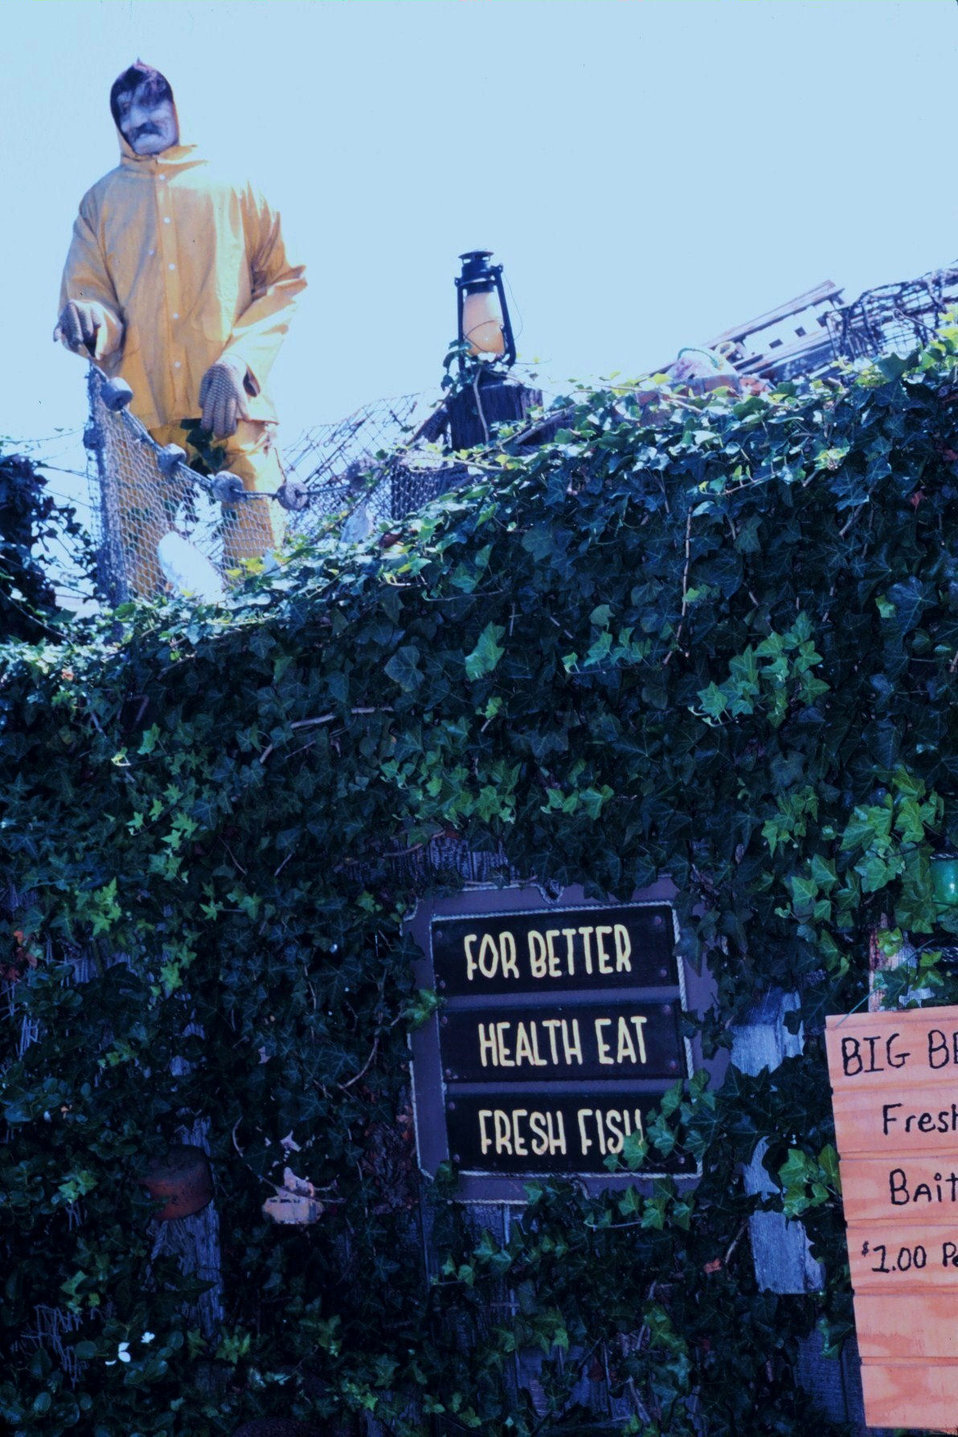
Views of the Dory Fleet Market